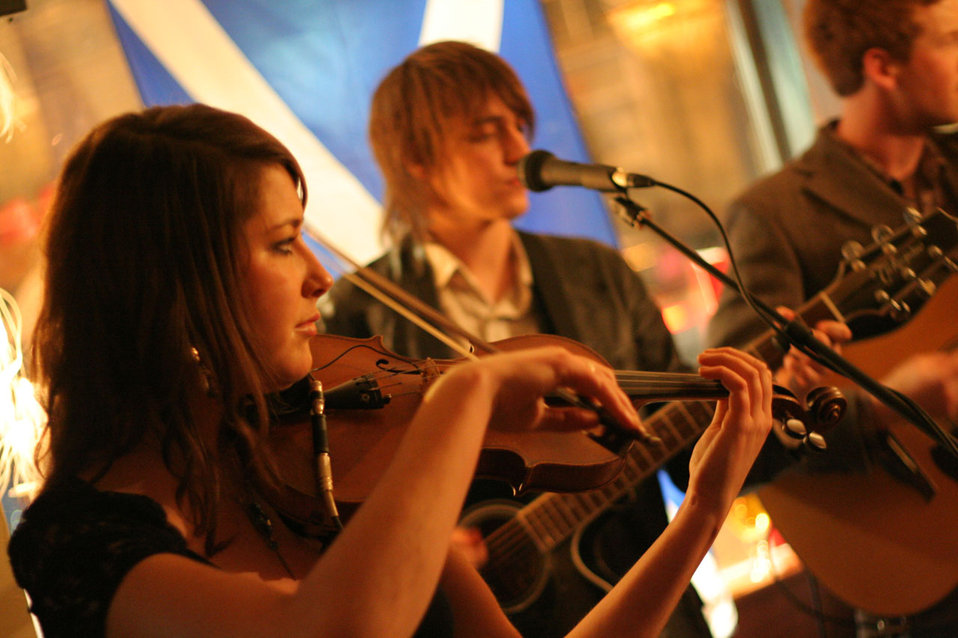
Singers and violin

Open mic session in a pub.